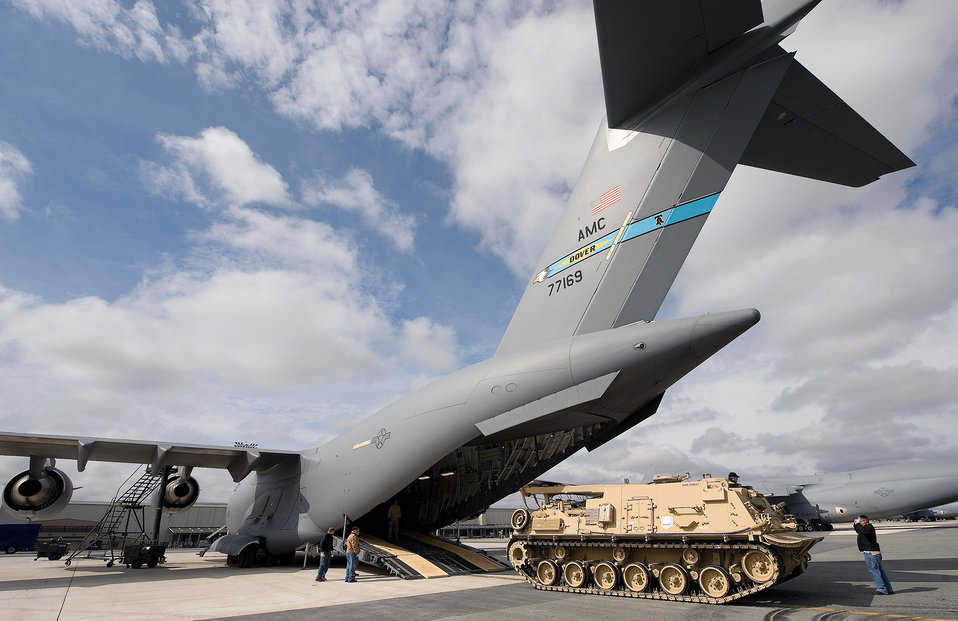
Heavy load

At Dover Air Force Base, Del., workers direct a U.S. Army M88A2 Heavy Equipment Recovery Combat Utility Lift and Evacuation System, or HERCULES, onto a C-17 Globemaster III. The HERCULES recovers inoperative tanks, and provides protection against small arms fire.